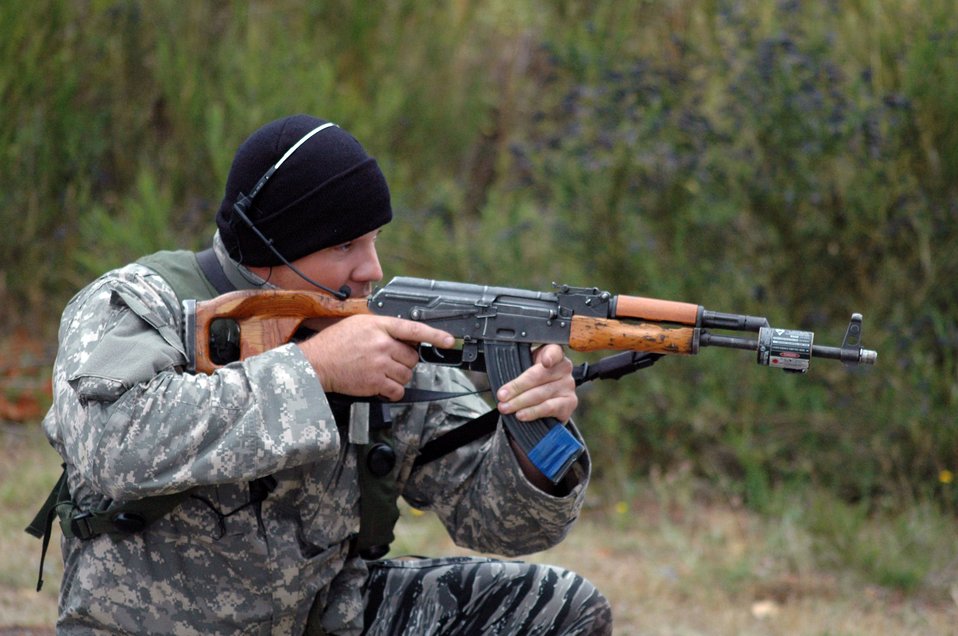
Security forces Rodeo teams tested by the best

Master Sgt. Michael McHone, an